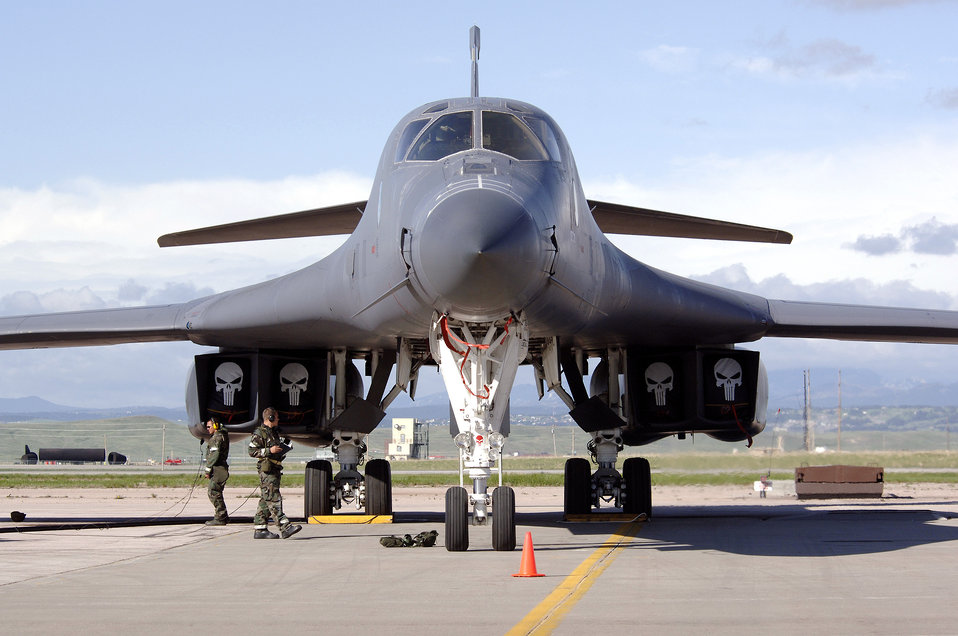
Exercise Badlands Express 06-03

A B-1 Lancer awaits a pre-flight inspection at Ellsworth Air Force Base, S.D., on Tuesday, May 23, 2006. The base is undergoing an exercise named Badlands Express 06-03 in preparation for an operational readiness inspection in July.